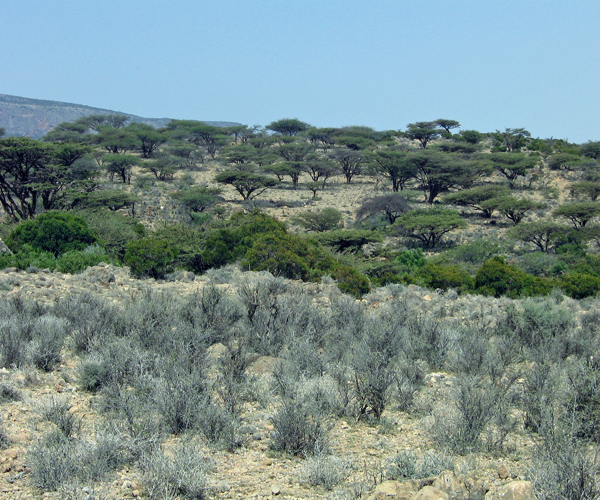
Almadow forest, Maakhir, Somalia